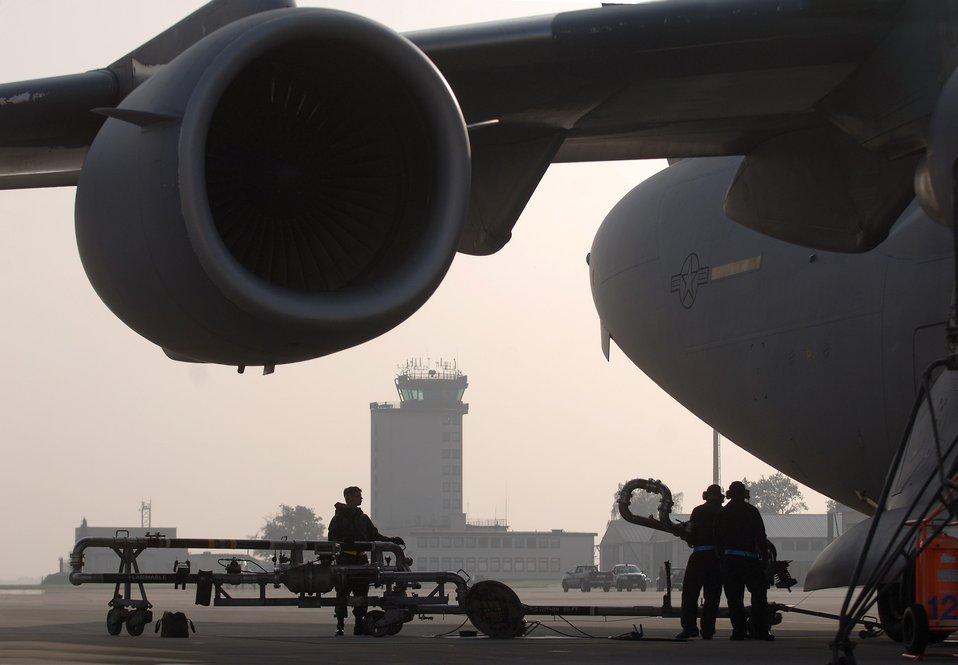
Ramstein flightline ops

Airman 1st Class Jesse Hayes and Senior Airmen Lance Sithammalat and Rich Edward work together to pump JP-8 fuel into a C-17 Globemaster III at Ramstein Air Base, Germany, Oct. 11. Airman Hayes is a mobile fuels operator assigned to the 435th Logistics Readiness Squadron; Airmen Sithammalat and Edward are crew chiefs with the 723rd Air Mobility Squadron.